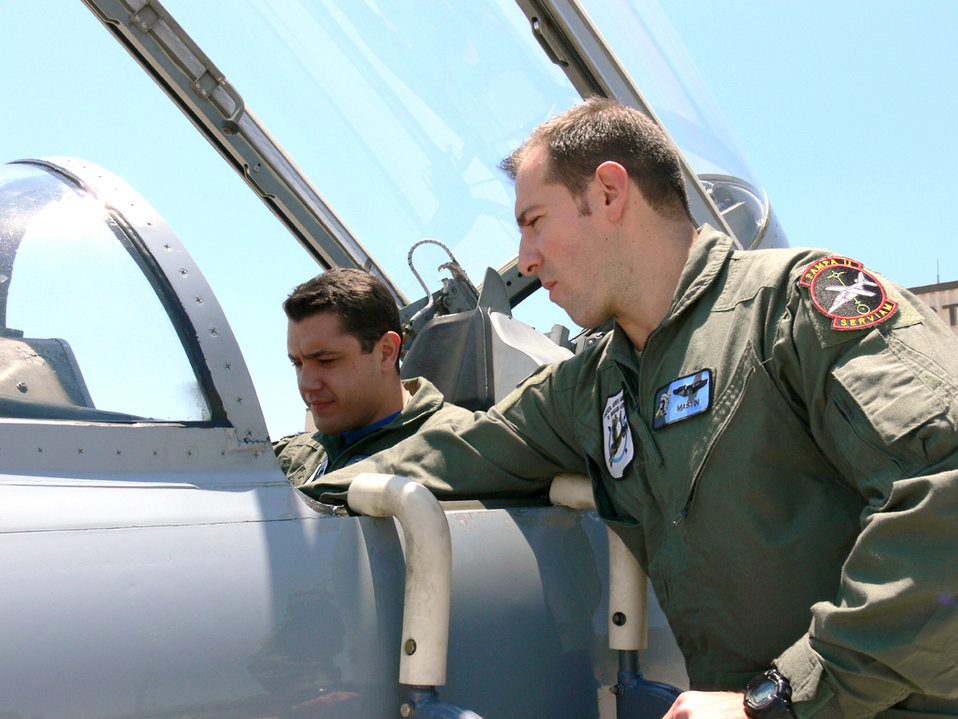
Training exchange strengthens ties between U.S., Argentina

First Lt. Roberto Montaldo and Capt. Juan Sabalua, Argentinean instructor pilots from Mendoza Air Force Base, Argentina, check out a T-38 Talon at Moody Air Force Base, Ga., on Tuesday, June 6, 2006. The weeklong visit gave the pilots an opportunity to share training techniques with their American counterparts.